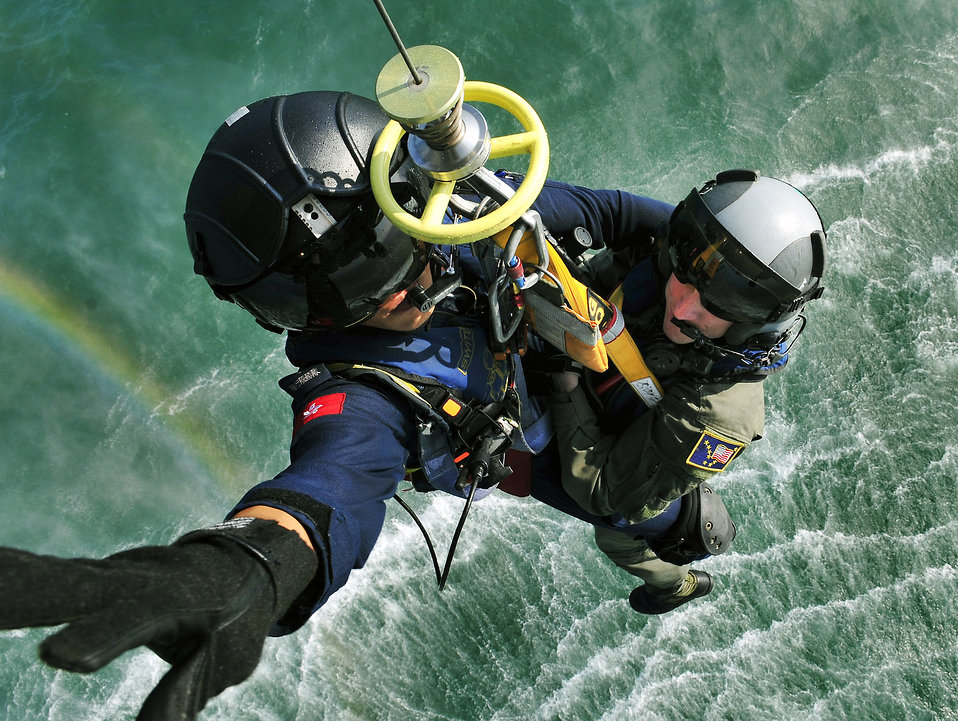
U.S. forces participate in Hong Kong exercise

Hong Kong Government Flying Service Lt. Vincent Wong (left) and Tech. Sgt. Brandon Stuemke practice seaborne hoisting during preparations for Hong Kong Search and Rescue Exercise 2008 Oct. 22 off the coast of Hong Kong. Sergeant Stuemke is a member of the Alaska Air National Guard's 212th Rescue Squadron, based at Kulis Air National Guard Base in Anchorage, Alaska. The annual exercise involved units from the U.S., Hong Kong and the People's Republic of China.